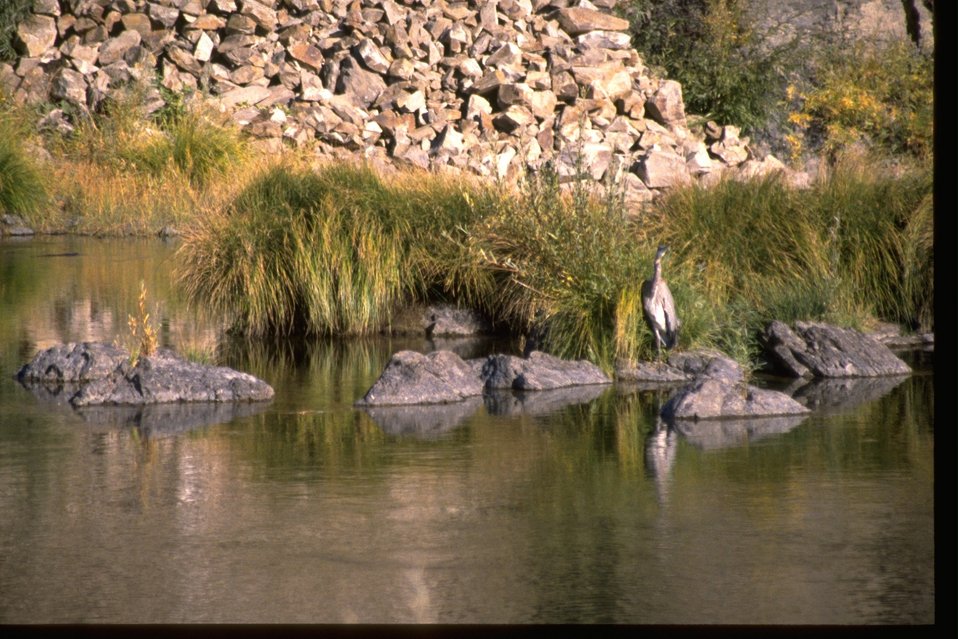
Heron on rock in John Day River with vegetation in the background.